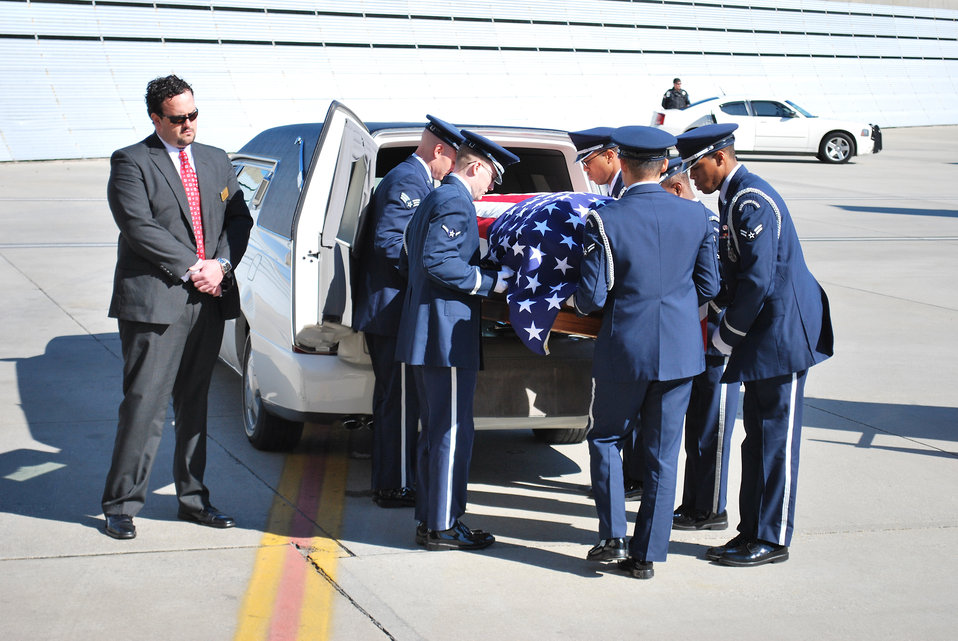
Bringing the Fallen Back Home

Airmen from the Eglin Air Force Base, Fla., Honor Guard place the coffin of 1st Lt. Robert Franklin Dees in to a waiting hearse Jan. 21, 2011, at Pensacola Regional Airport, Fla. Lieutenant Dees was missing since the Korean War and was being returned home to Ozark, Ala., for burial.